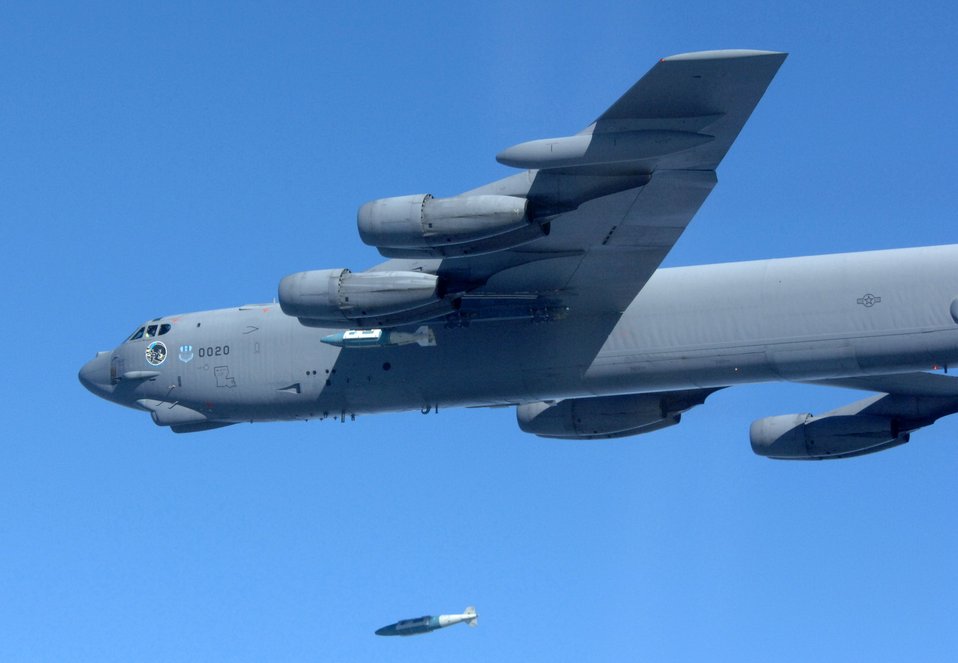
Northwest Florida site of weapons system evaluation

A B-52 Stratofortress from the 2nd Bomb Wing at Barksdale Air Force Base, La., launches a joint-direct attack missile Dec. 5 as part of a weapon systems evaluation held at Eglin AFB, Fla. The 2nd BW shared the bomb range with A-10 Thunderbolt IIs from Davis Monthan AFB, Ariz., and Canadian CF-18 Hornets.